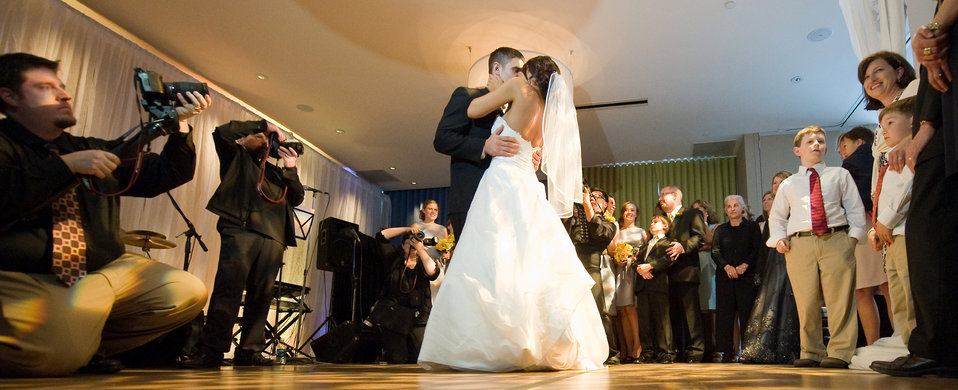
San Francisco Dream Wedding

Capt. Mike and Vanessa Hawkins dance their first dance together as man and wife May 14, 2010, as part of their